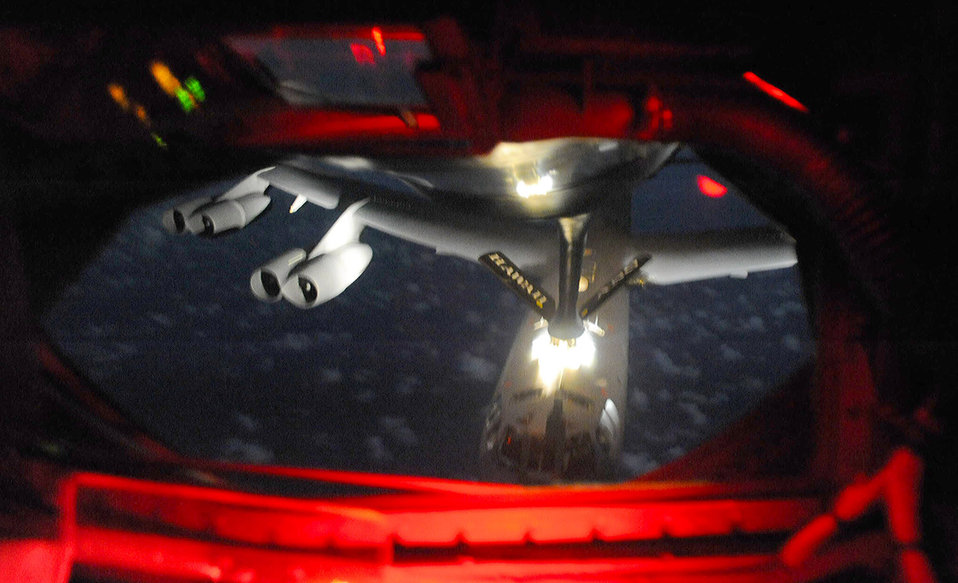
Tanker Toads

A B-52 Stratofortress is refueled by a KC-135 Stratotanker manned by members of the 96th and 203rd Air Refueling Squadrons Dec. 15, 2010, over the Pacific Ocean as part of the second sortie of the 96th ARS's first operational mission. During the mission, a 96th ARS KC-135 joined a KC-135 from the Iowa Air National Guard as part of a two-ship formation to refuel two B-52 Stratofortresses on their way to Guam. The KC-135s offloaded 105,000 pounds of fuel to each of the B-52s.